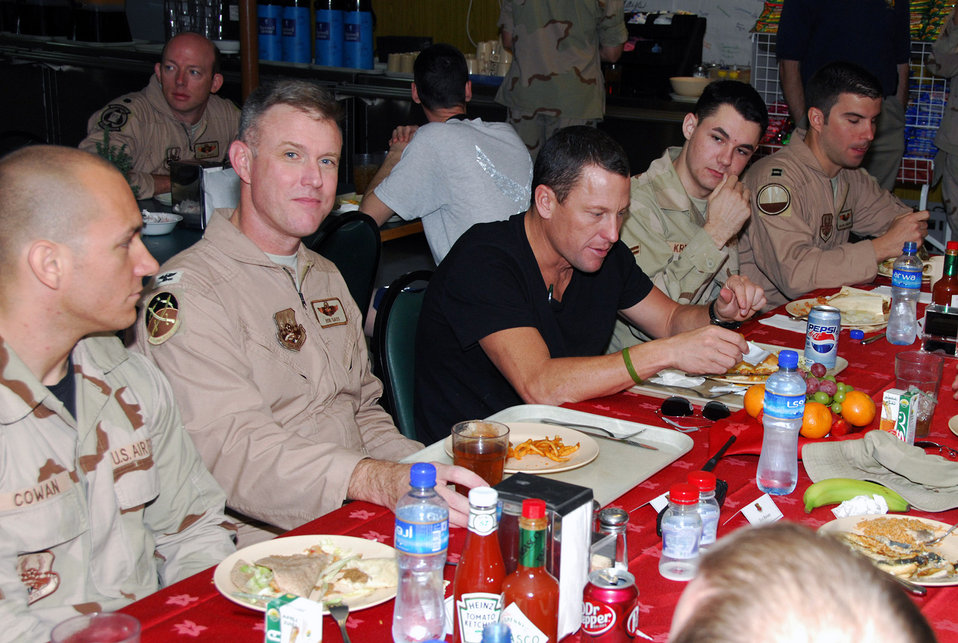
USO group visits servicemembers in Southwest Asia

Lance Armstrong dines with Airmen at the Independence Dining Facility Dec. 17 at a Southwest Asia air base. Mr. Armstrong, seven time winner of the Tour de France, is one of five celebrities touring with the United Service Organizations 2007 holiday show. Other celebrities included Miss USA Rachel Smith, Kid Rock, Lewis Black and Robin Williams.